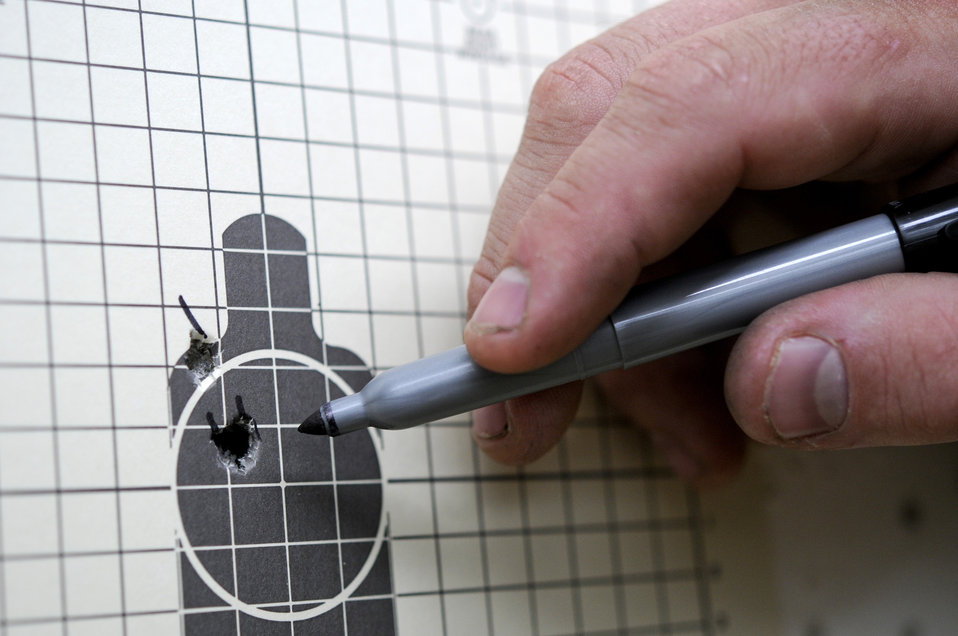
Combat arms training

Staff Sgt. James Kipp indicates on-target shots on a zeroing target after making sight corrections June 1, 2011, during combat arms training at the firing range at Kadena Air Base, Japan.